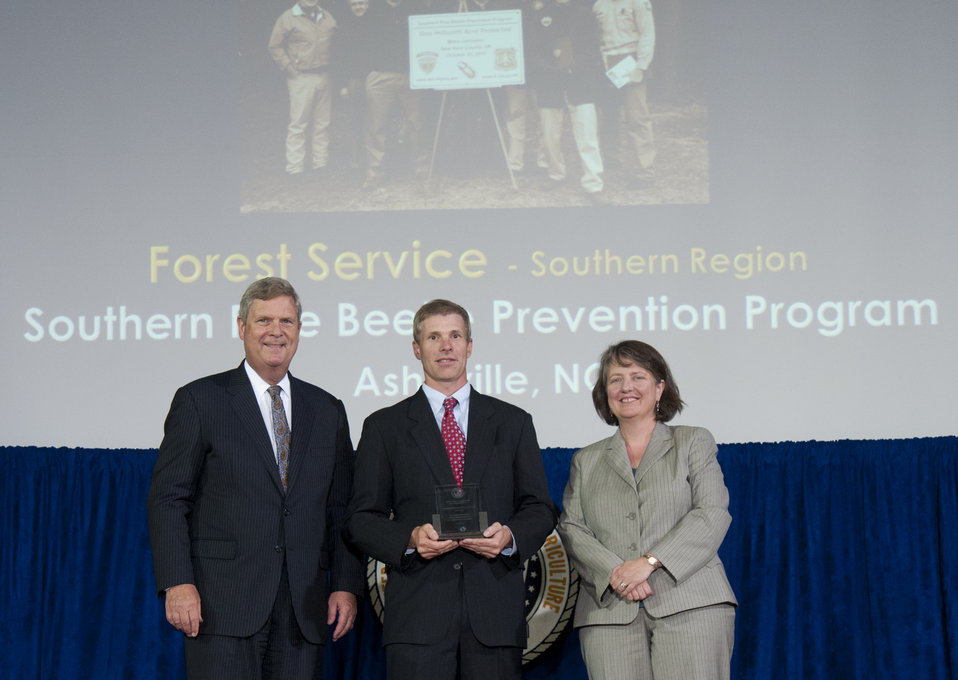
Agriculture Secretary Tom Vilsack and Agriculture Deputy Secretary Kathleen Merrigan present the Secretary’s Honor Award to Southern Pine Beetle Prevention Program Forest Service (FS) group leader John T. Nowak at the U.S. Department of Agriculture (USDA) 64th Annual Honor Awards Ceremony in Washington, D.C. on Wednesday, Sept. 12, 2012. Southern Pine Beetle Prevention Program lead an “all lands approach” to improving the resiliency of more than one million acres of forests to southern pine beetle, fire, and other threats.